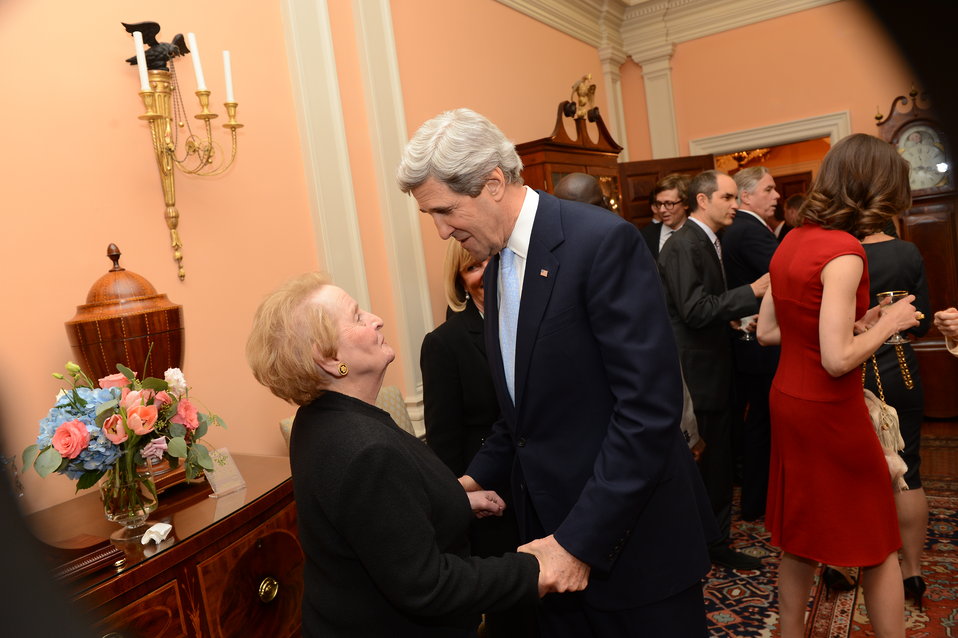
Secretary Kerry Greets Former Secretary Albright

U.S. Secretary of State John Kerry greets former U.S. Secretary of State Madeleine Albright before his ceremonial swearing-in at the U.S. Department of State in Washington, D.C., February 6, 2013.